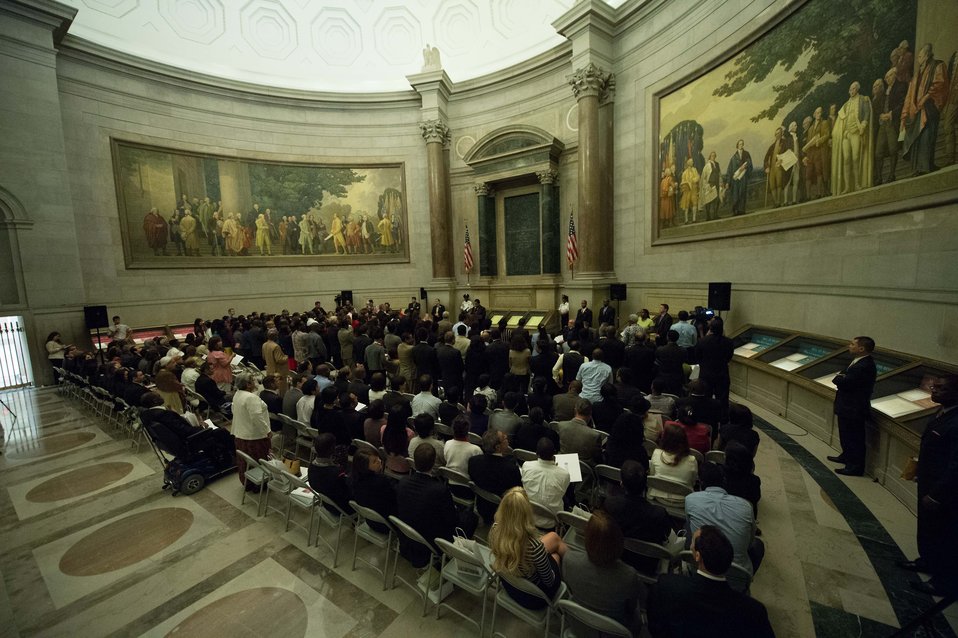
Constitution Day Naturalization Ceremony